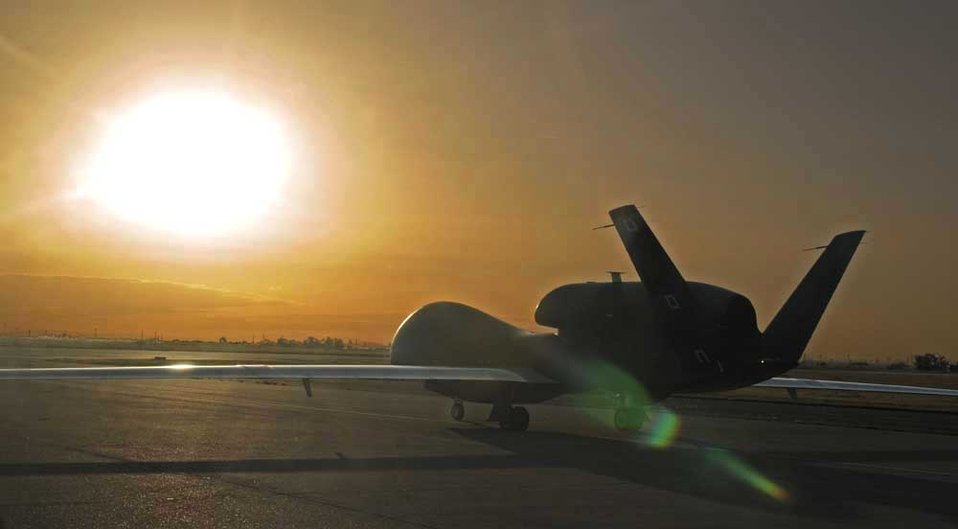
1st Global Hawk lands in Guam

An RQ-4 Global Hawk taxis down the runway April 8, 2010, at Beale Air Force Base, Calif. The RQ-4 program will undergo an evaluation in October 2010.